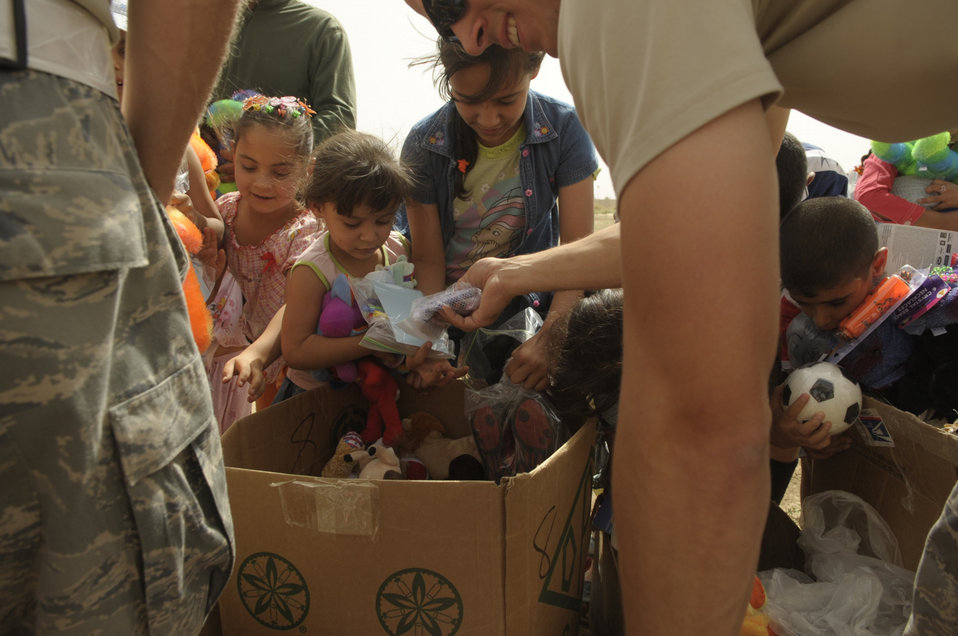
Sather Airmen foster relationships with local community

Members of the 447th Air Expeditionary Group pass out toys and gifts donated by the Airmen June 6 at Sather Air Base, Iraq. The gifts were donated and delivered as part of the Good Neighbor Program at Sather AB.